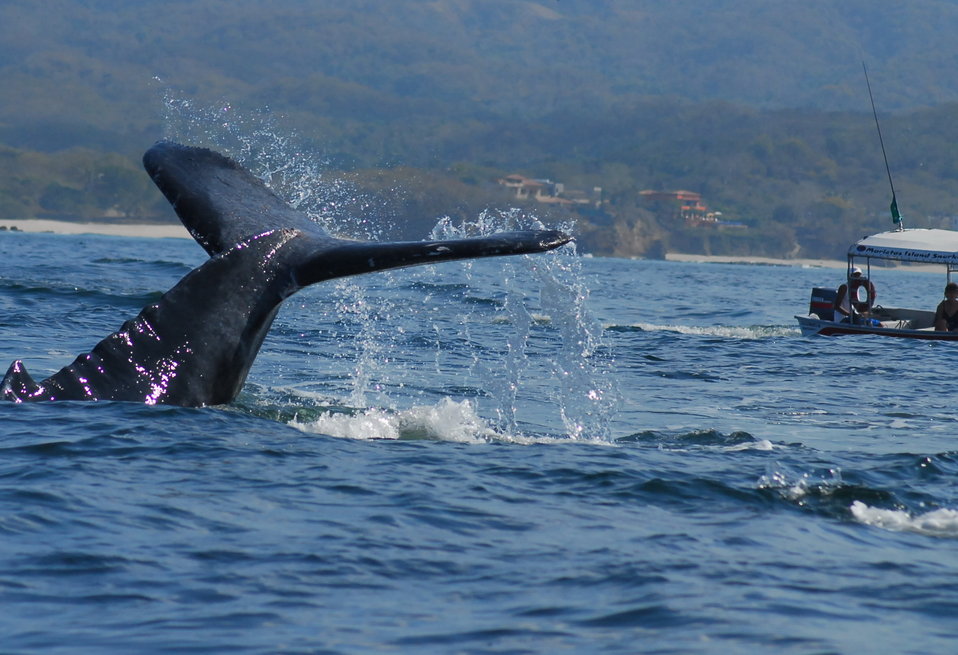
Whale